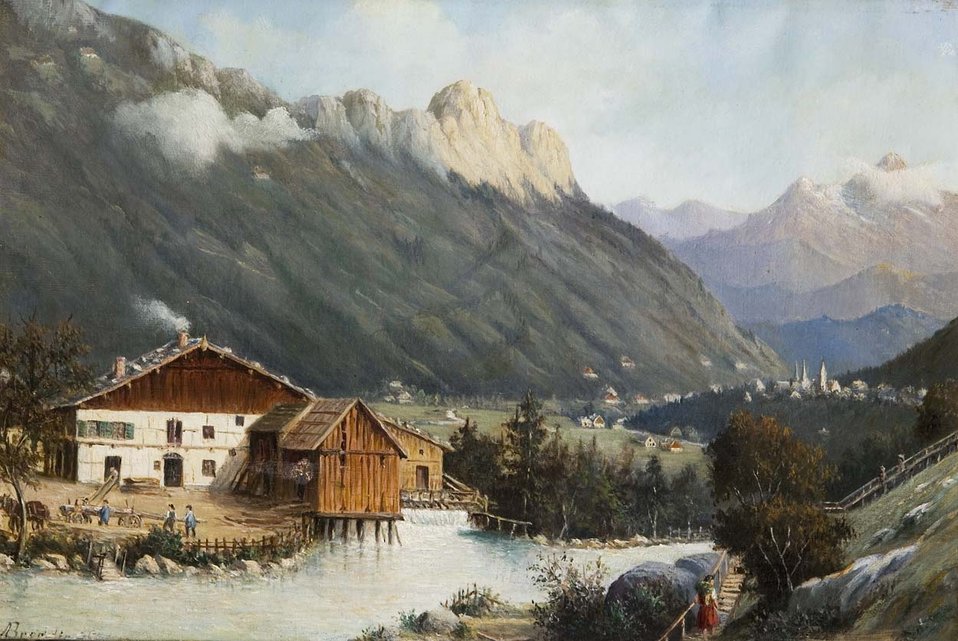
Antonietta Brandeis (attr) Berchtesgaden 1889